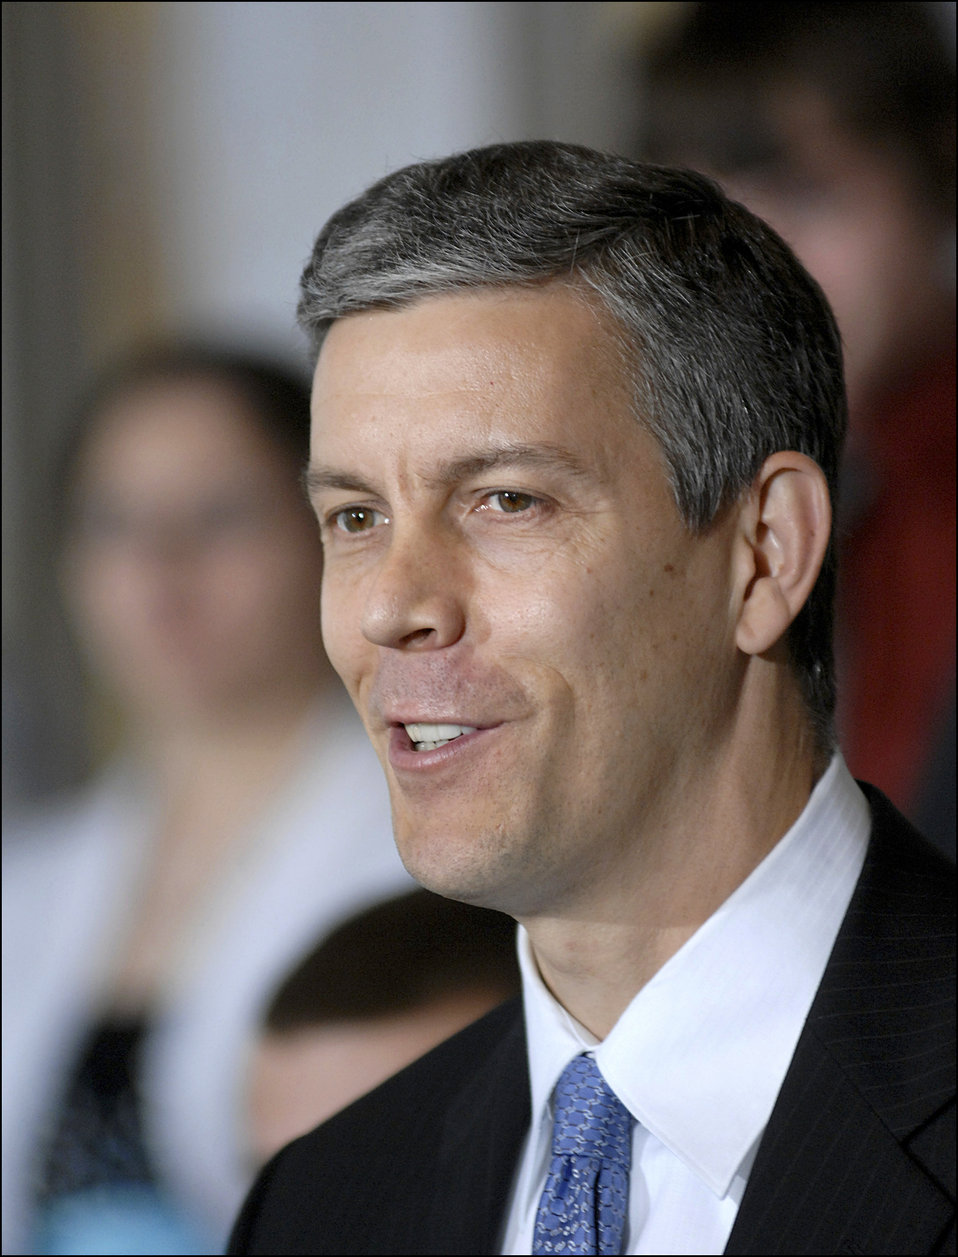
National Financial Capability Challenge, 4/28/10

Secretary of the Department of Education, Arne Duncan.